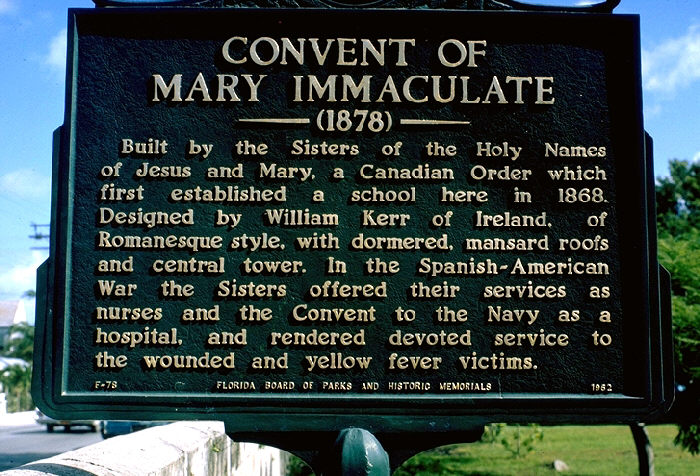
Historical marker of Convent of Mary Immaculate (1878), whose Sisters nursed yellow fever victims.